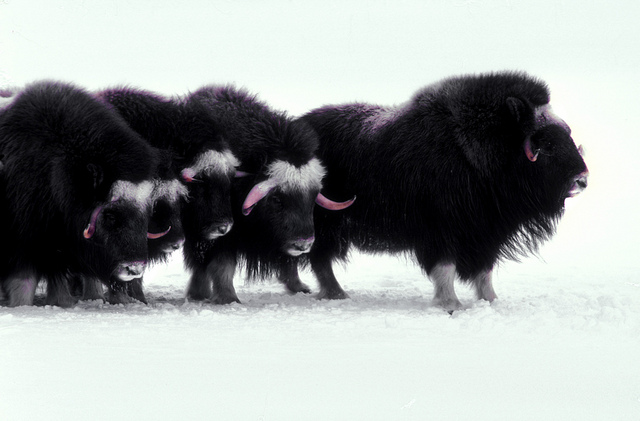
muskoxen bull and cows protecting the calves